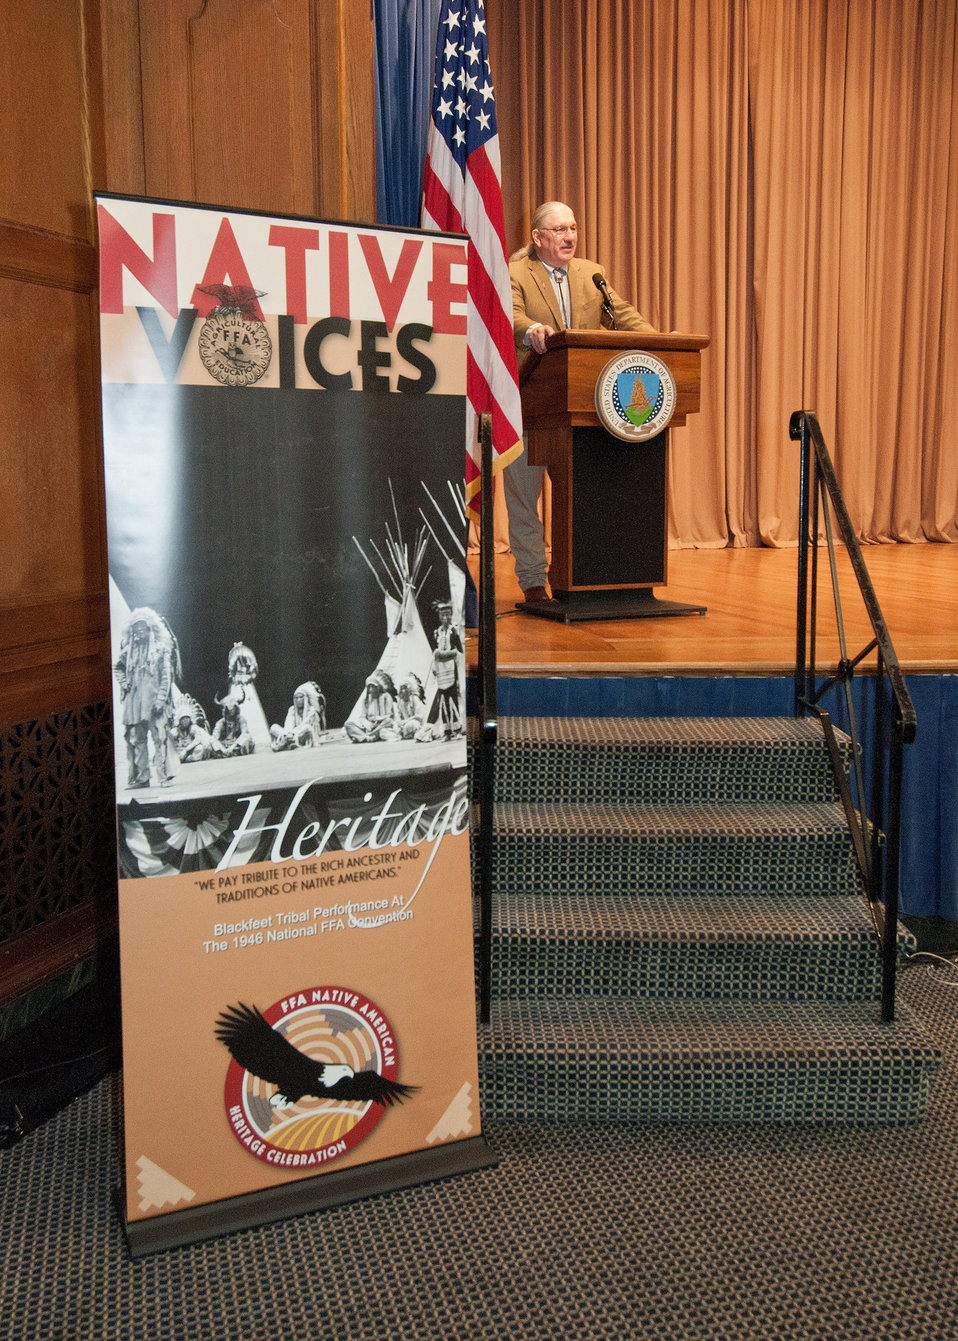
Arthur “Butch” Blazer, Deputy Under Secretary, Natural Resources and Environment offered his experience’s and opportunities as the keynote speaker at the United States Department of Agriculture, Native American Indian Heritage Month celebration in Washington, DC, on Wednesday, November 16, 2011, The theme of this year’s event is, “Native Youth: Cultivating the Future.”